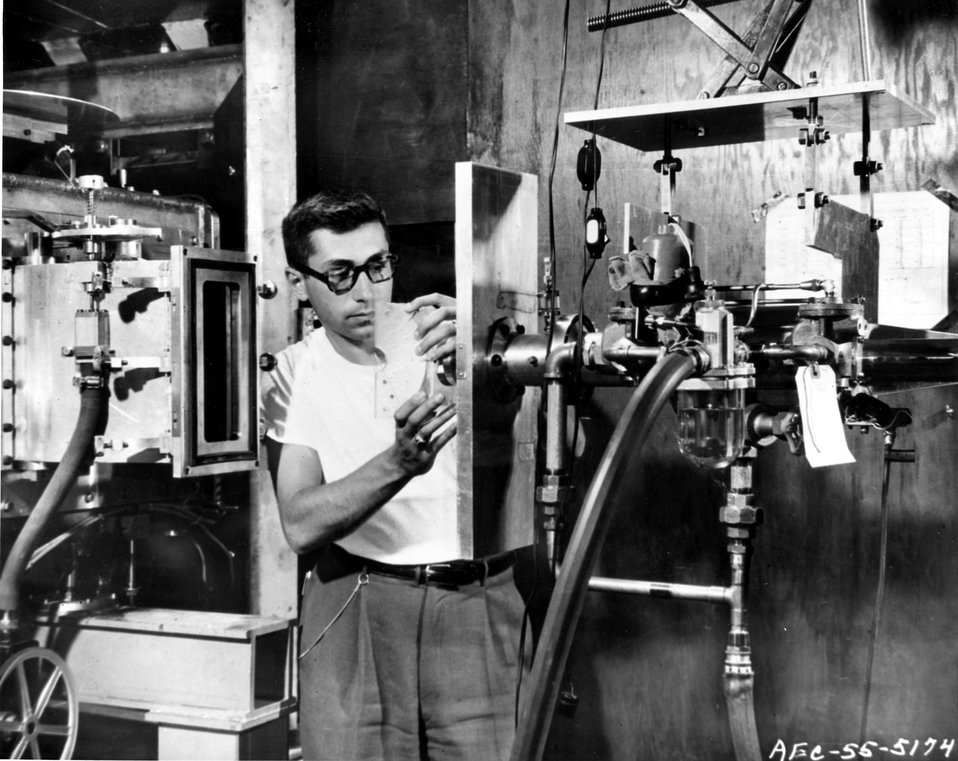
Physicist readies a piece if plastic which will be bombarded by billion volt protons in the Cosmotron at Brookhaven National Laboratory, Upton, New York. c. 1955